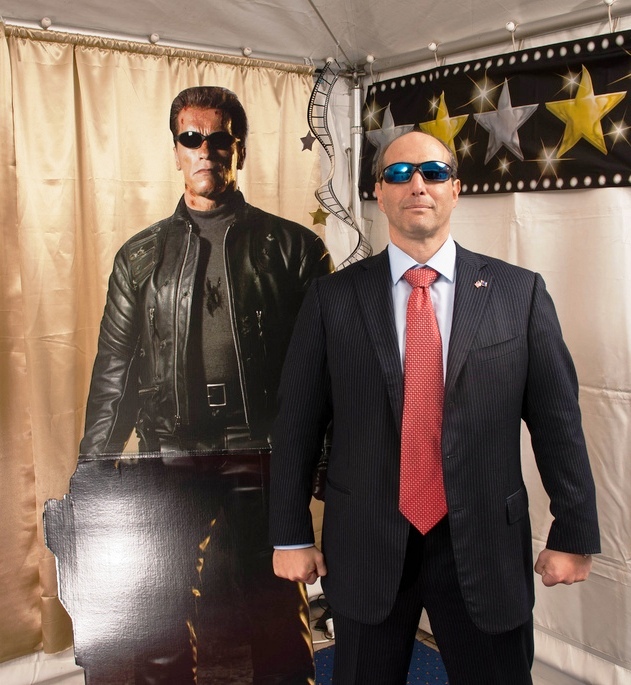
U.S. Embassy Canberra Staff Enjoy 'California Dreamin''

U.S. Embassy Canberra in Australia staff and their Australian and diplomatic guests enjoy the 'California Dreamin’' theme at the U.S. Independence Day Celebration in Canberra, Australia, on July 1, 2010.